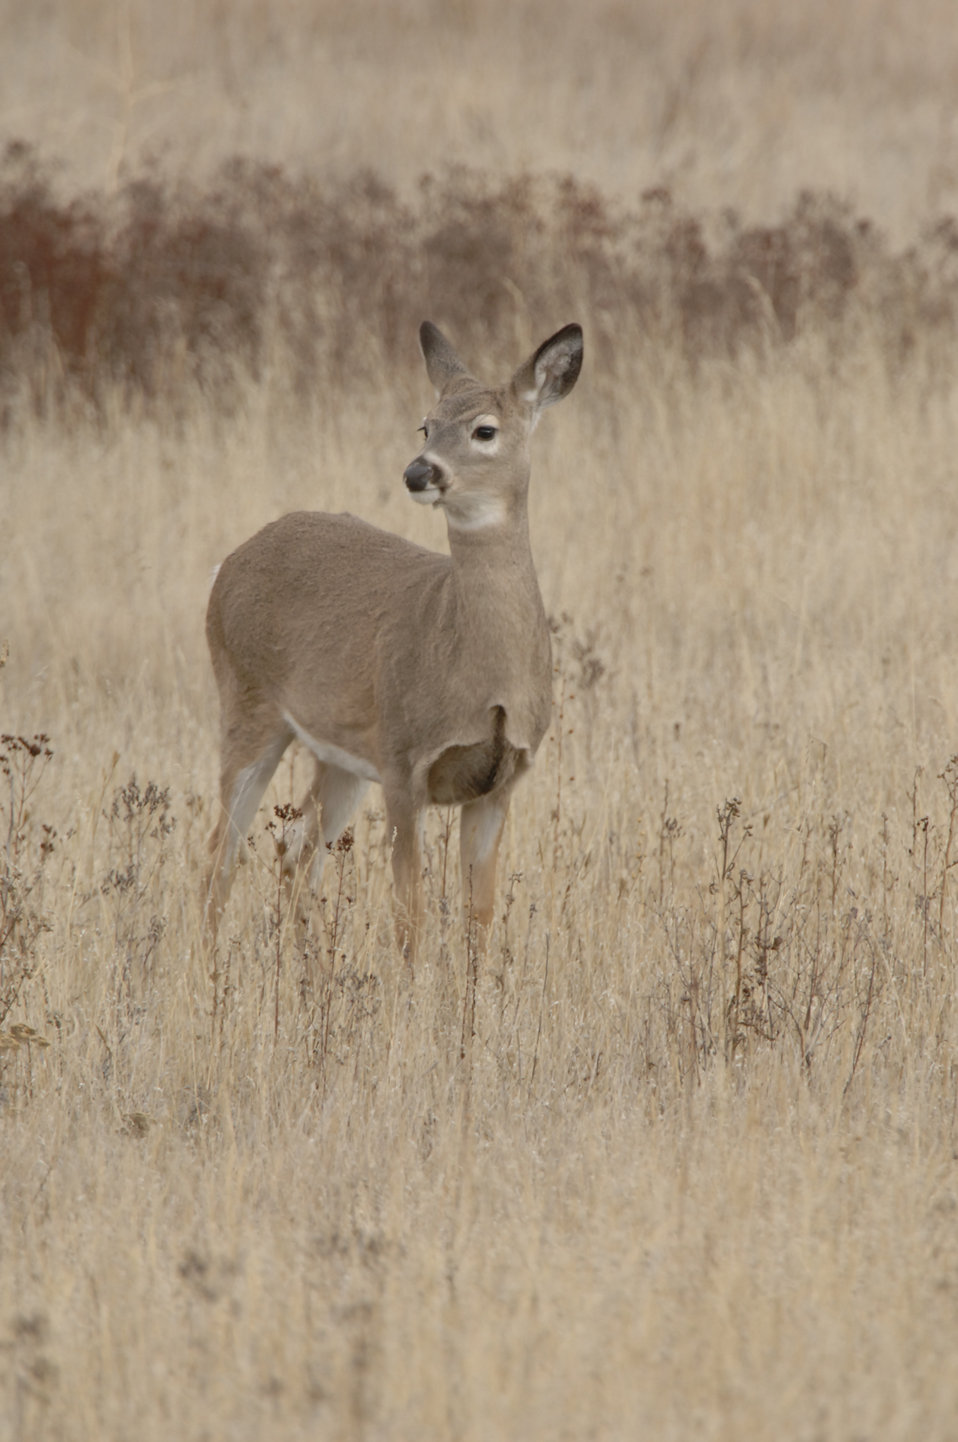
White tailed deer graze in the National Bison Range Wildlife Refuge in Montana on November 17, 2007. The U.S. Fish and Wildlife Service administers this refuge as part of the National Wildlife Refuge System. The refuge was established in 1908 and is one of the oldest Wildlife Refuges in the nation and was established to support a population of American bison. There are approximately 350-500 American bison. Other large wildlife found on the Range includes elk, whitetail and mule deer, pronghorn antelope, bighorn sheep and black bear.